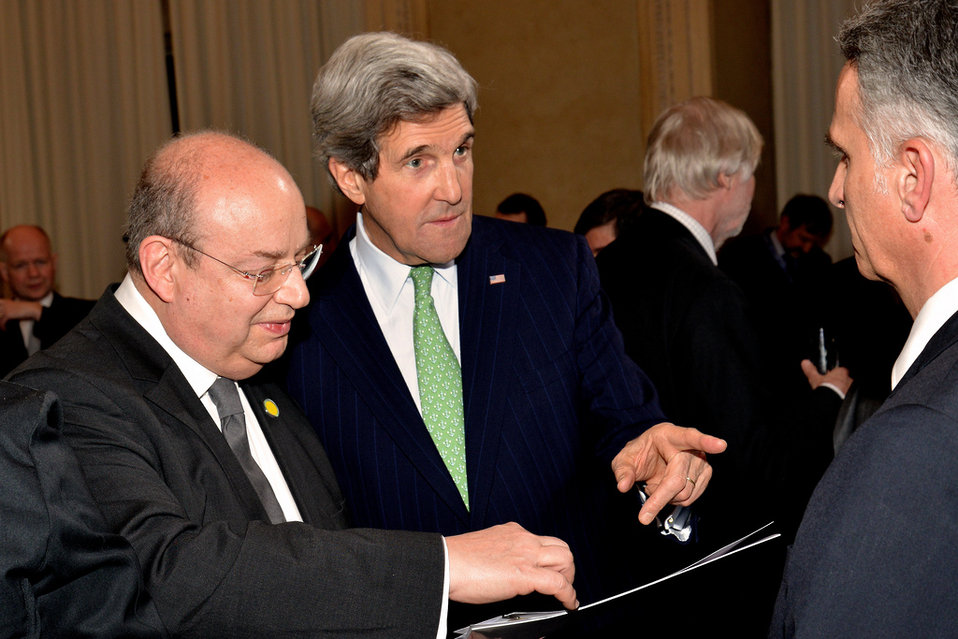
Secretary Kerry With Maltese Foreign Minister Zammit-Dimech and Swiss Federal Councillor

U.S. Secretary of State John Kerry tells Swiss Federal Councillor Didier Burkhalter, right, about a gift from Maltese Foreign Affairs Minister Francis Zammit-Dimech, left, which traced the family history of his wife, Teresa Heinz Kerry, during a meeting in Rome, Italy, on February 27, 2013.